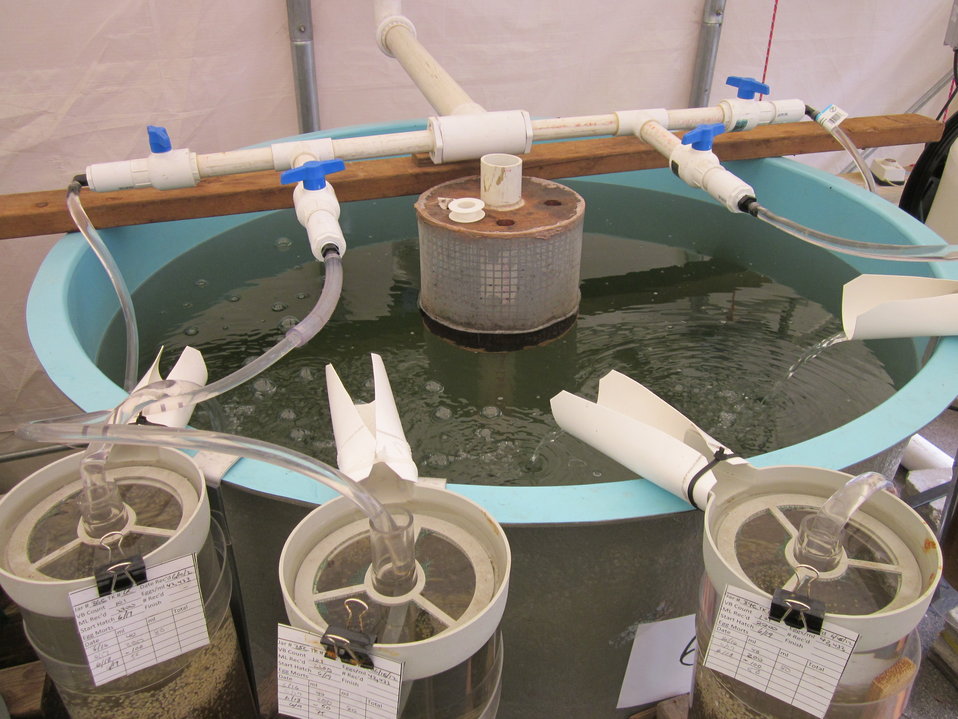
Water slides for shad larvae

North Attleboro, MA, June 2012: A top view of an American Shad tank shows the shutes through which larvae swim from egg cylinders.

Fish biologists capture adult shad from the Merrimack and Connecticut Rivers and transport them to the hatchery where tank spawning occurs. The fertilized eggs flow through a drain to a control box where they are collected and placed into egg cylinders hung around tanks. When the shad larvae hatch in about 4 days, they swim into the tanks through chutes at the top of the cylinders. The larvae are marked with oxytetracycline and released after a few days, for a turnaround time of about a week from egg to release in the Merrimack and Charles Rivers.

In 2012, the hatchery quadrupled past production for a projected total of 7-8 million shad.